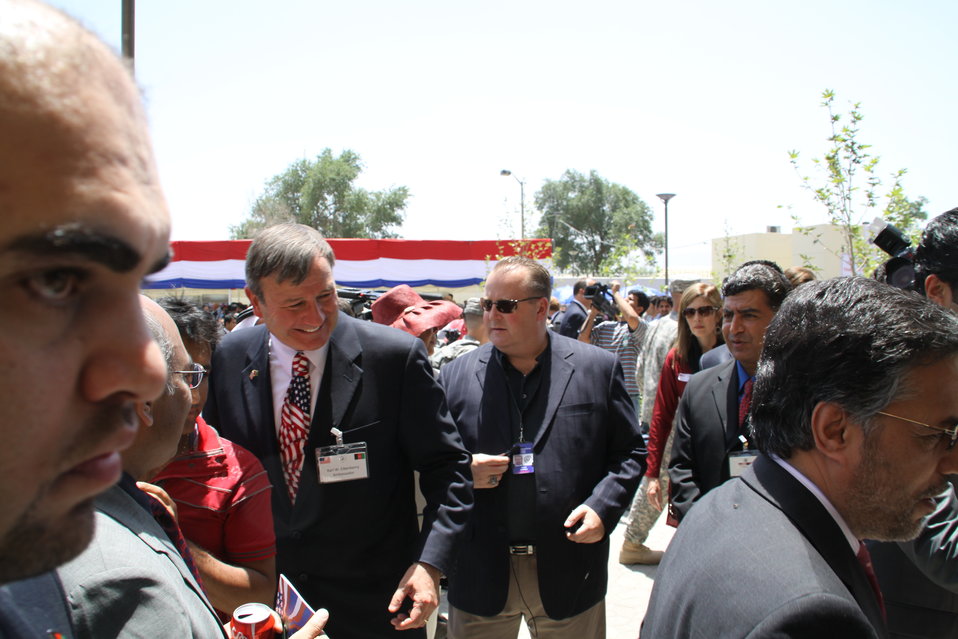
Kabul Official July 4th Celebration